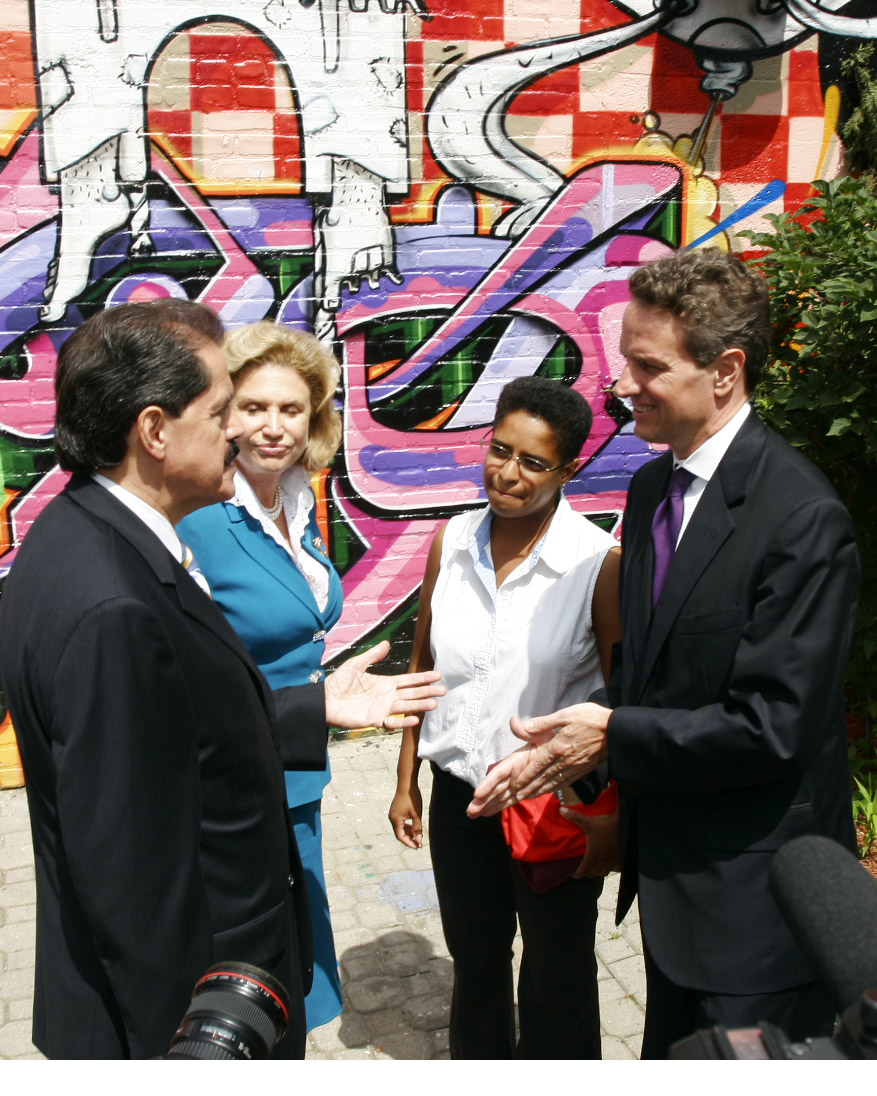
The Point: June 29, 2009

Congressman José E. Serrano (NY-16), Congresswoman Carolyn Maloney (NY-14), President and CEO of The Point Community Development Corporation Maria Torres, and Secretary Geithner at The Point in the Bronx.